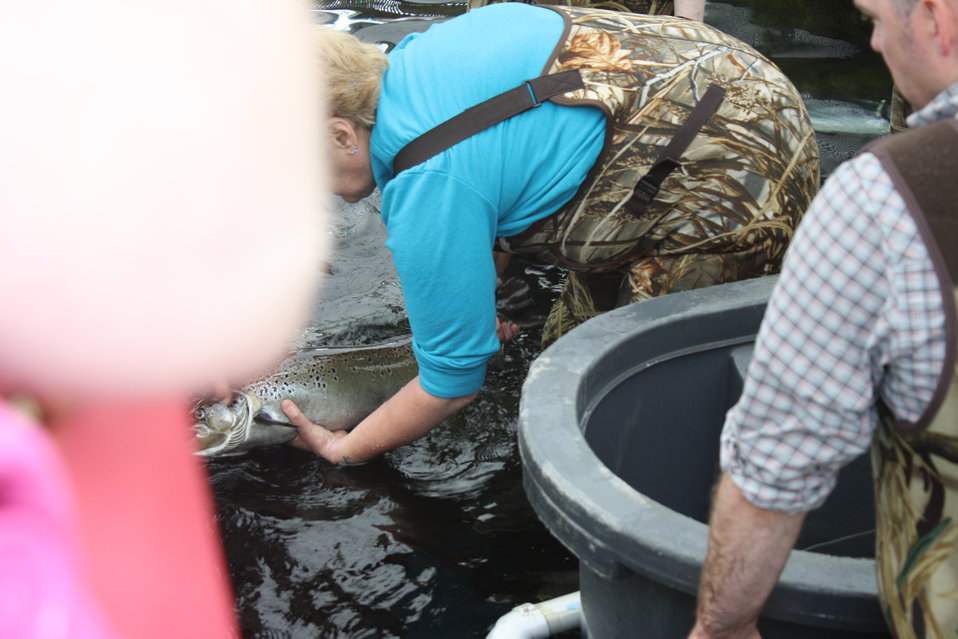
Nashua National Fish Hatchery welcomes regional office employees

Removing Atlantic salmon for weighing and measuring.